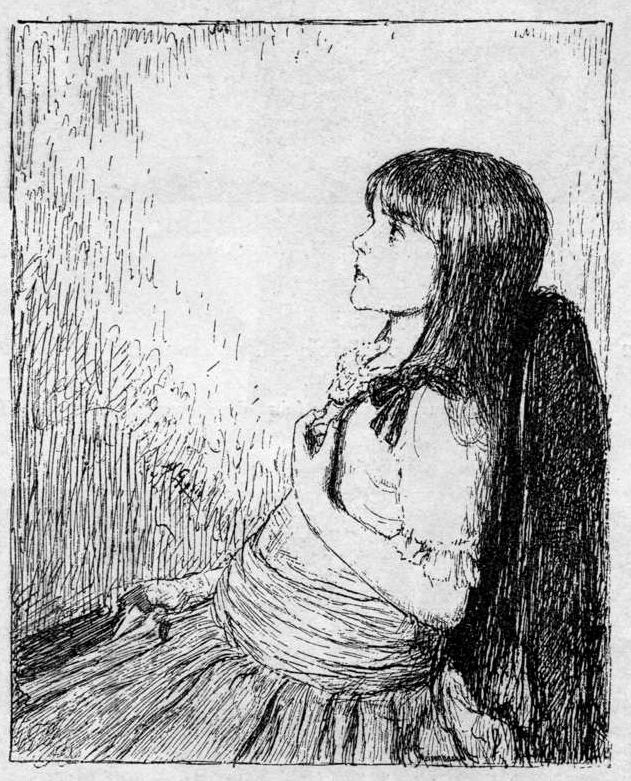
Im Studium